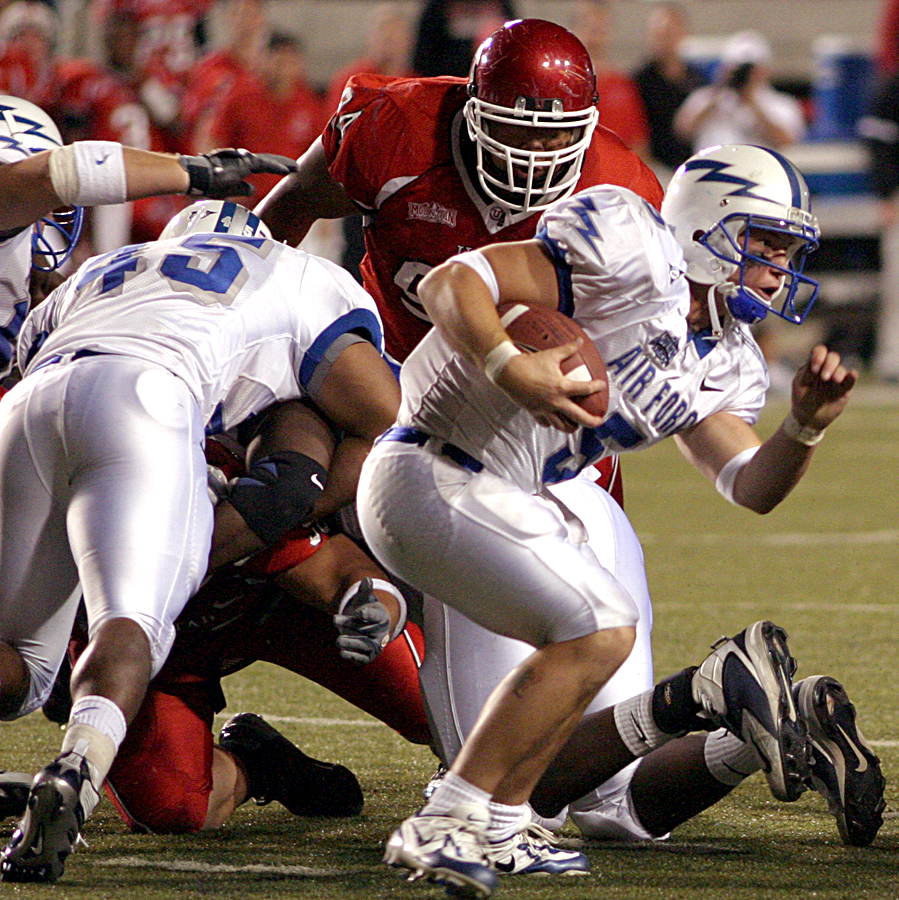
Falcon’s fourth-quarter comeback falls short in 38-35 loss

SALT LAKE CITY -- Air Force quarterback Shaun Carney looks for running room as fullback Ryan Williams, 45, covers his back by blocking University of Utah defenders.